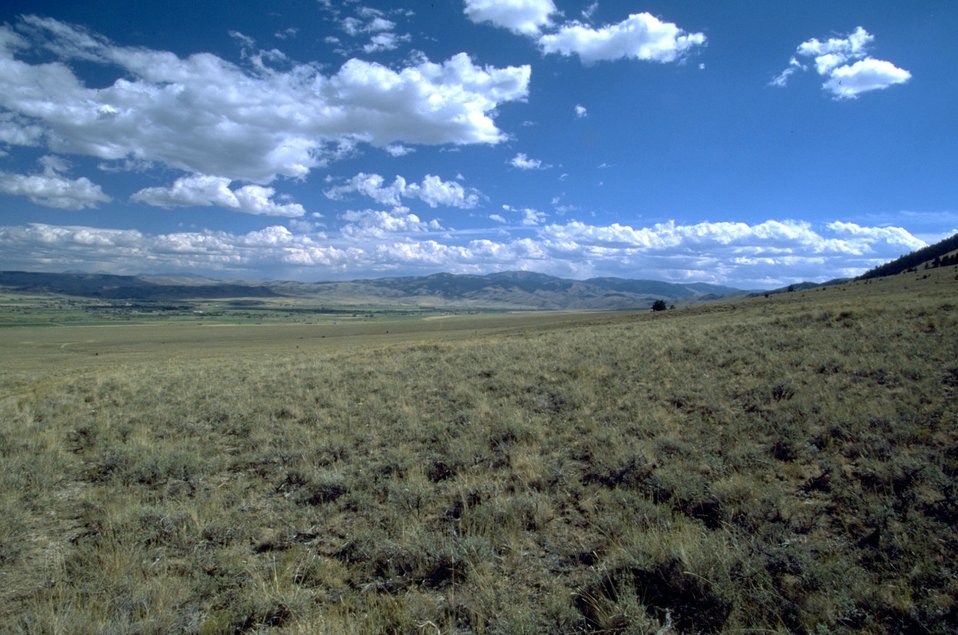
Sage grass hillside overlooking the valley bottom. Interesting cloud formations